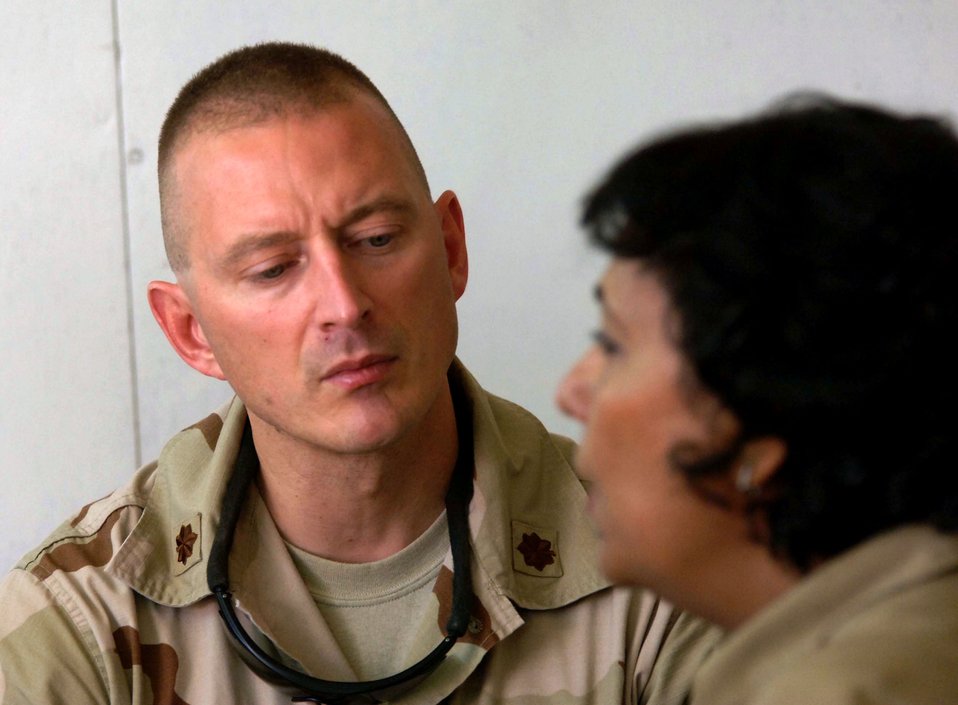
Medics lend a helping hand

Maj. (Dr.) Andrew Chontos (left) listens to an Iraqi mother speak to a translator about an ailment June 21 at the Civil-Military Operations Center medical clinic at Camp Striker, Iraq. Major Chontos is a 447th Expeditionary Medical Squadron medical doctor. The Civil-Military Operations Center medical clinic provides free medical service to impoverished Iraqi citizens.